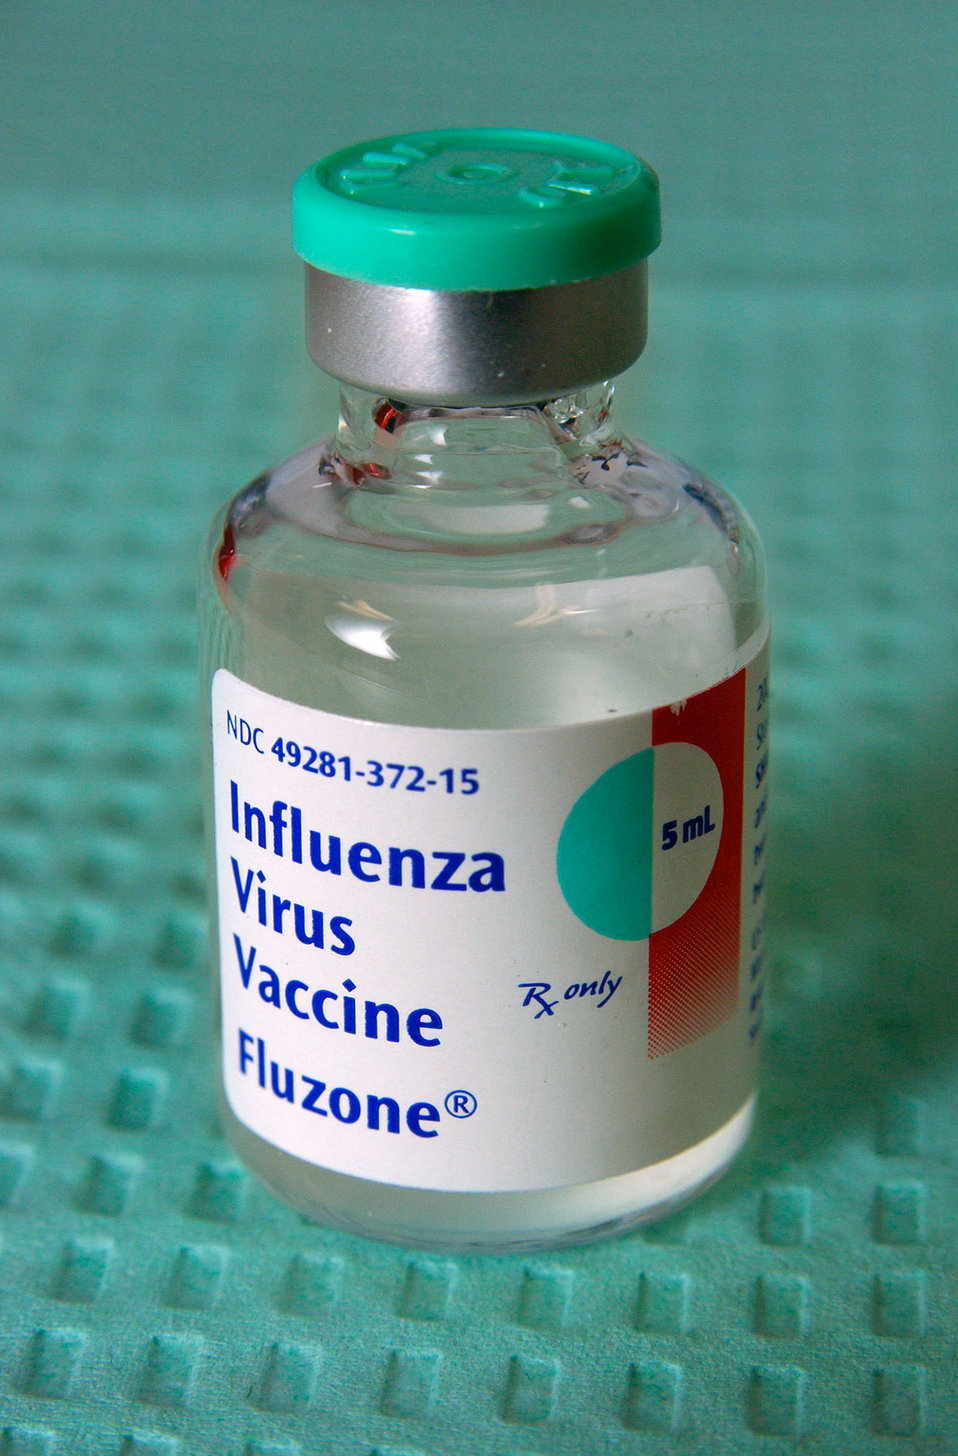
This is a 5 ml. vial containing the Influenza Virus Vaccine, Fluzone�, distributed by Aventis Pasteur, USA.